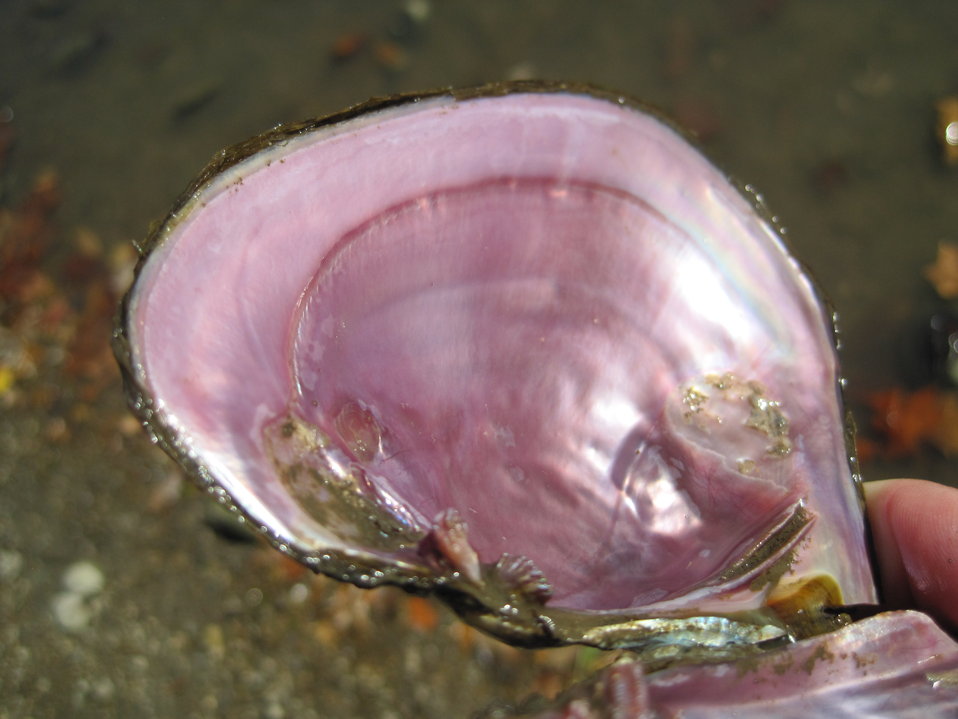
Pink Papershell Mussel

This is the inside of a Pink Papershell Mussel (Potamilus ohiensis). This Pink Papershell was discovered in the Marais des Cygnes River in 2011.